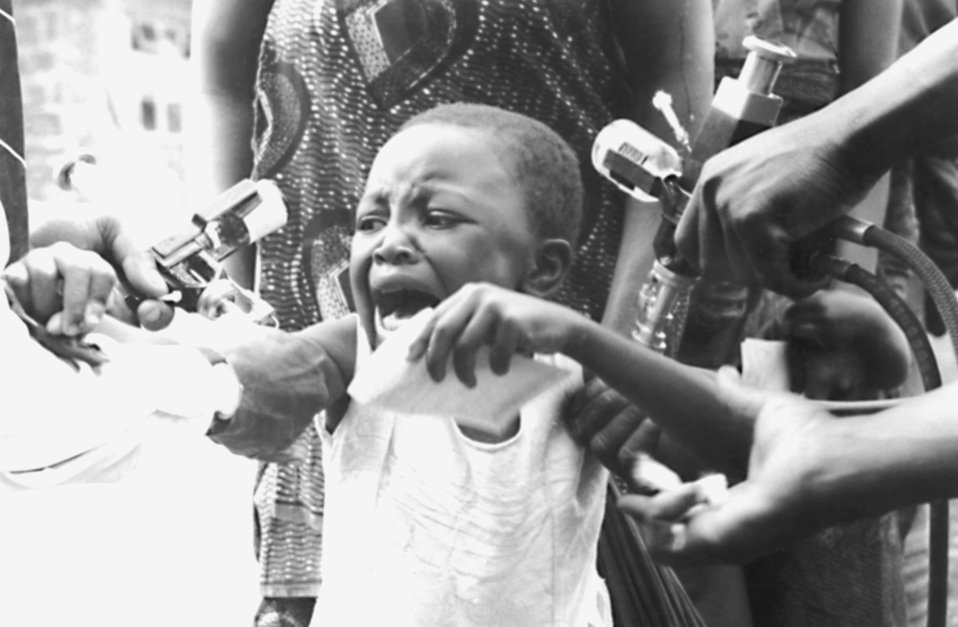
Smallpox vaccination of a West African child during the West Africa Smallpox Eradication and Measle Control Program.